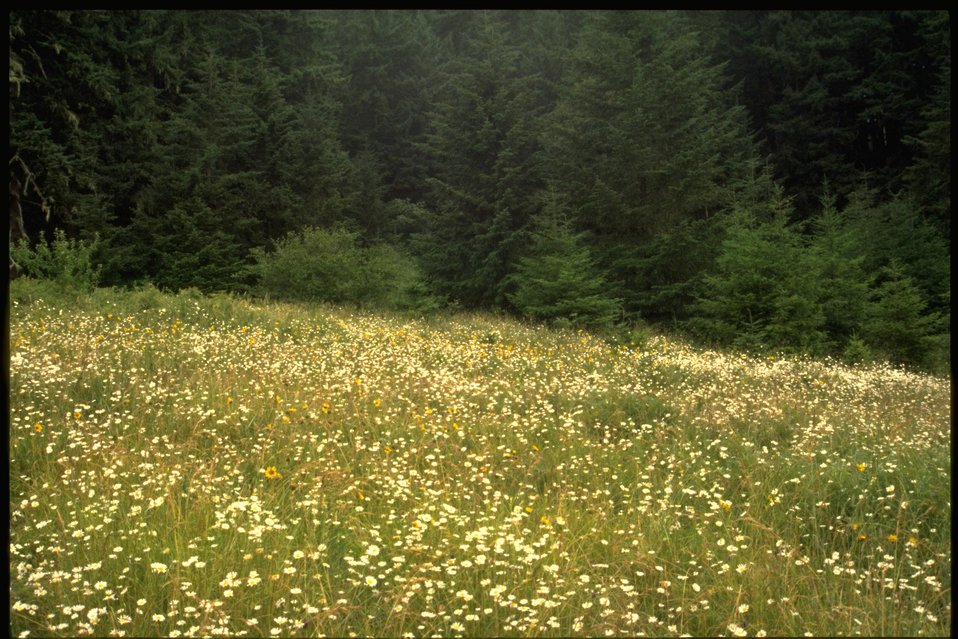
Scenic view of McGowan Meadow.